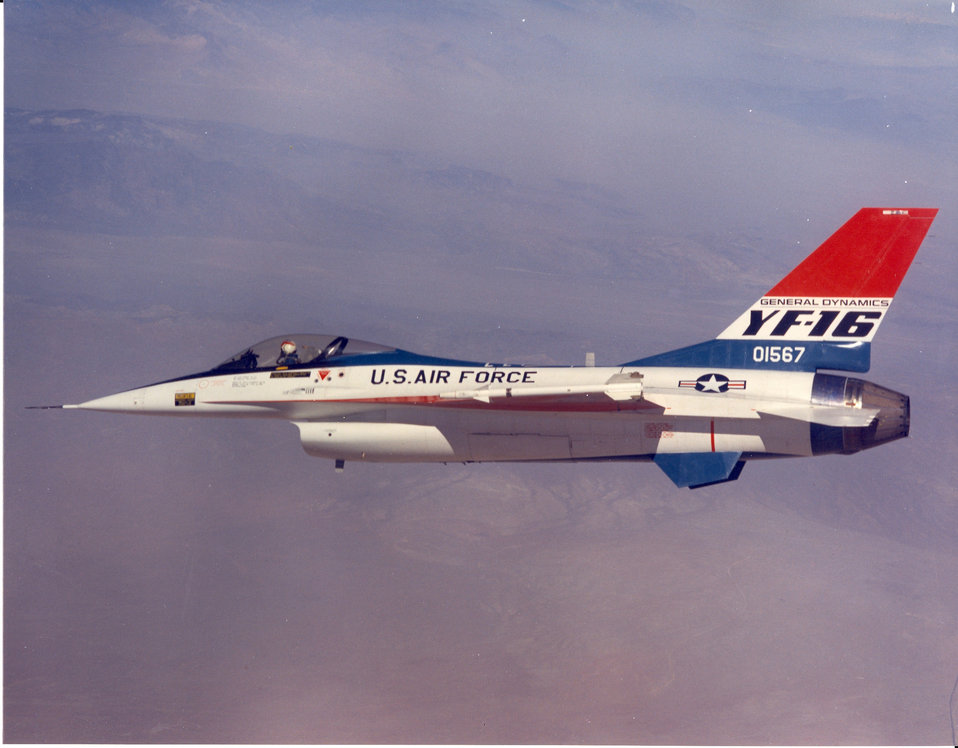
YF-16 flies in 1974

Employing